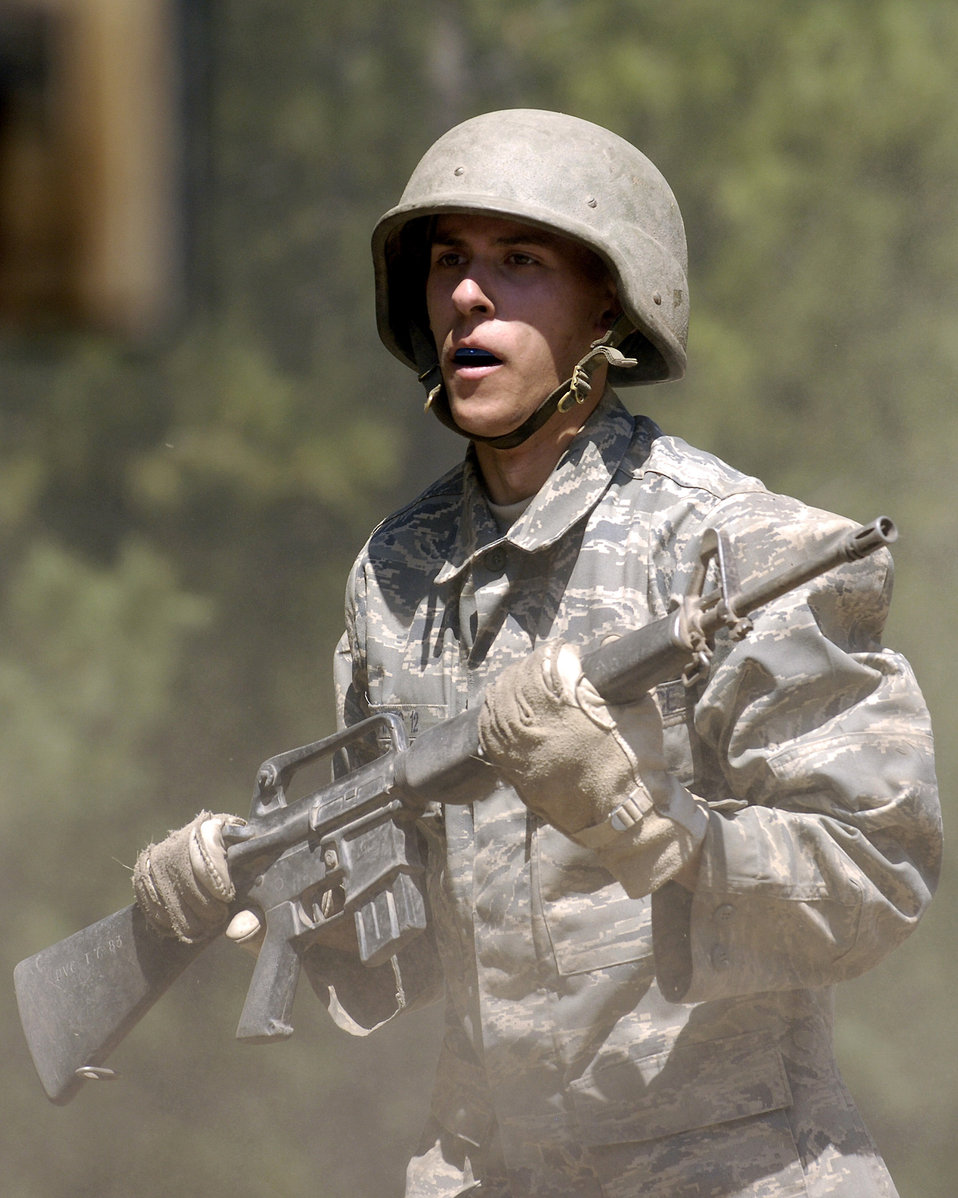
New cadets discover Jacks Valley

U.S. Air Force Academy Basic Cadet Stephen Pineo runs the assault course in a cloud of dust July 16 during the field training portion of basic training at the Jacks Valley training area near Colorado Springs, Colo.